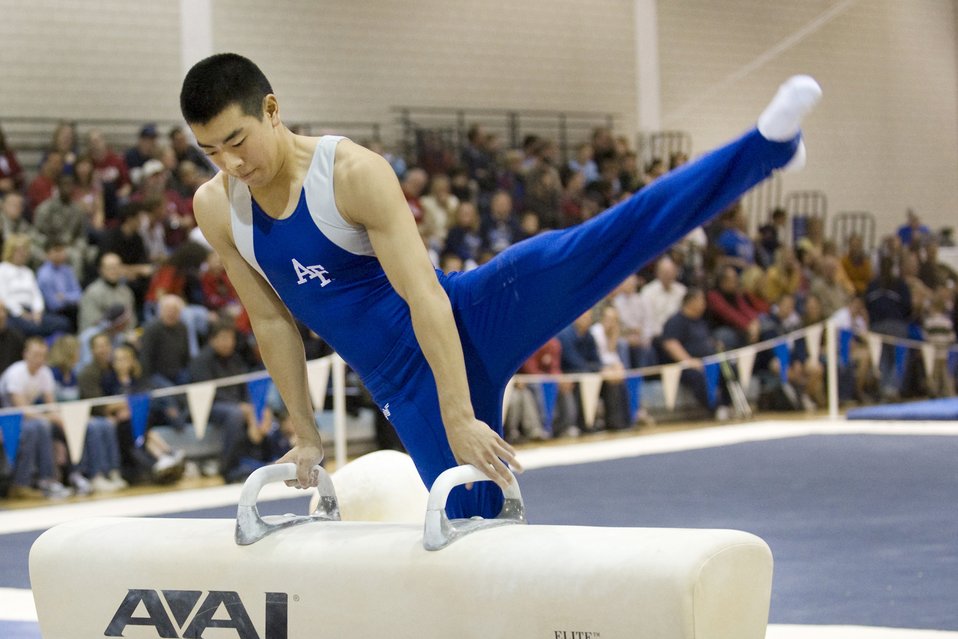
Falcons open season with Rocky Mountain event

Falcon freshman James Okamoto performs on the pommel horse during the Rocky Mountain Open meet held in the field house at the U. S. Air Force Academy, Colo., Jan. 16, 2010. Okamoto earned the Falcons best placement of the night, with a fourth on the pommel horse scoring 14.050. With his collegiate debut, Okamoto recorded the second best pommel score in Academy history.